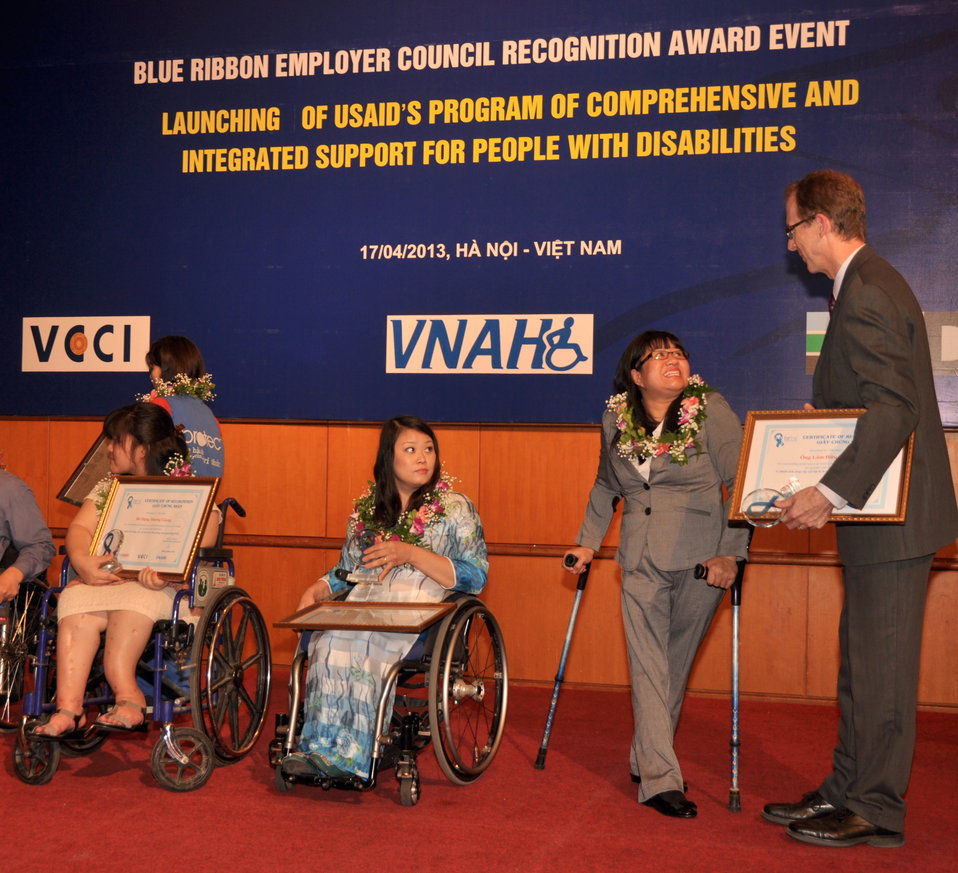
Blue Ribbon Employer Council Awards for Hiring Vietnamese with Disabilities

Hanoi, April 17, 2013